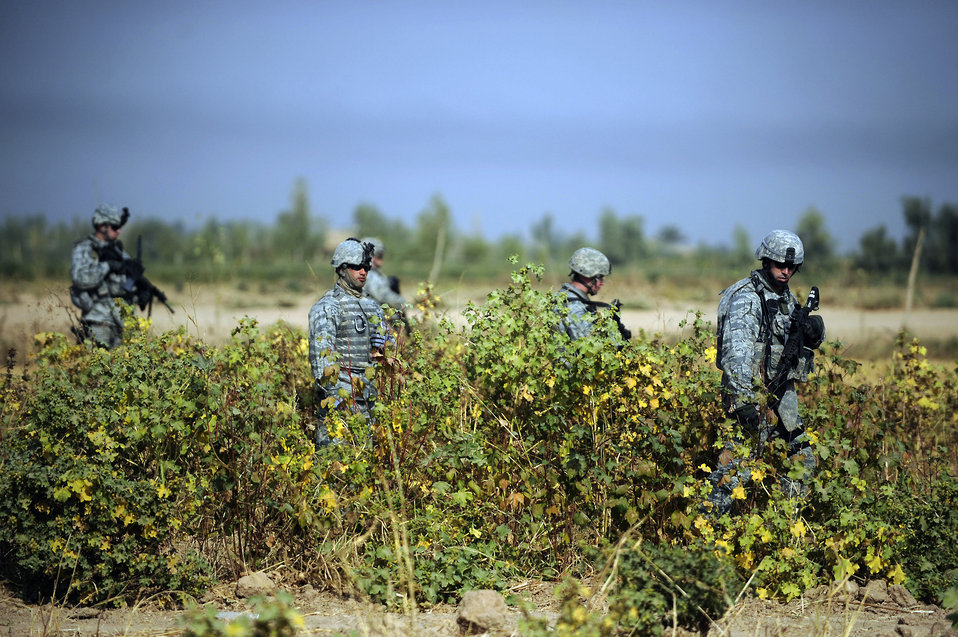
Airmen patrol outside to protect inside

Airmen from the 532nd Expeditionary Security Forces Squadron search a field during a force protection patrol Oct. 17, 2009, outside Joint Base Balad, Iraq. Members of the 532nd Expeditionary Security Forces Squadron patrol to provide a security presence intended to deter anyone who would do harm to the people who live and work at the base.